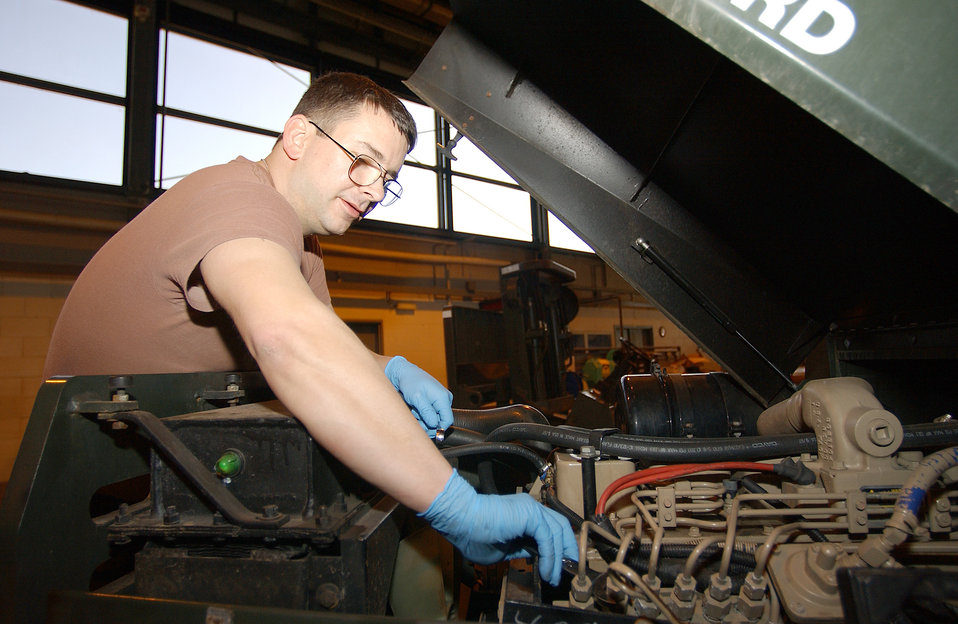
Under the hood

ROYAL AIR FORCE LAKENHEATH, England -- Staff Sgt. Curtis Parker adjusts a fuel injector on an aircraft tow truck here March 31. Sergeant Parker is a vehicle maintenance journeyman with the 48th Logistics Readiness Squadron.